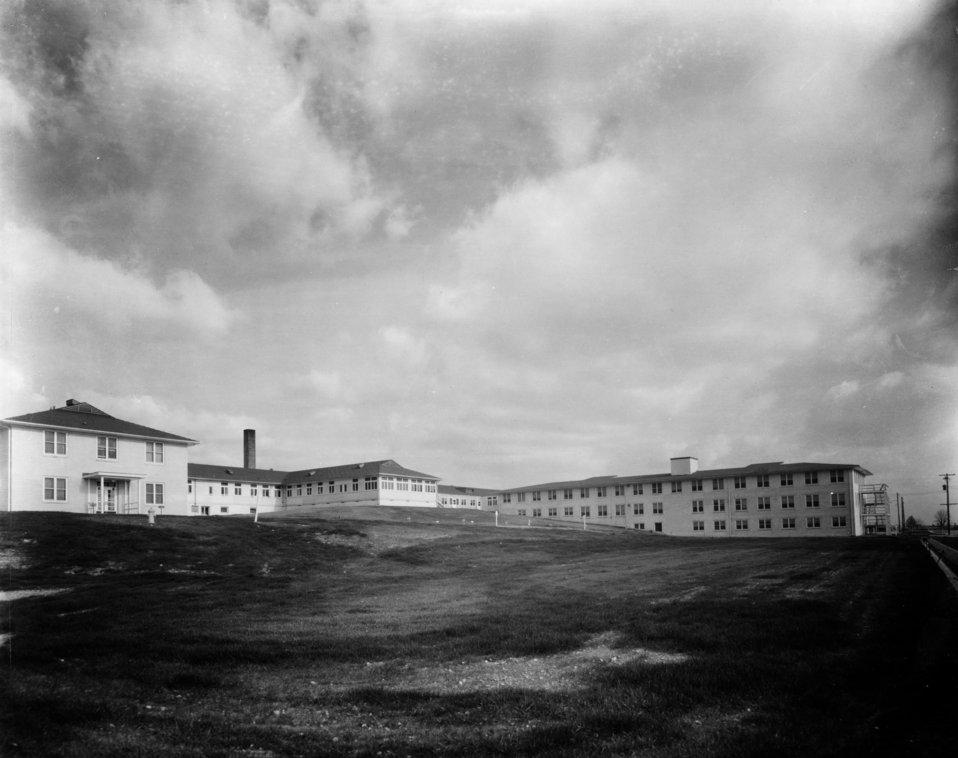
Medical at Oak Ridge